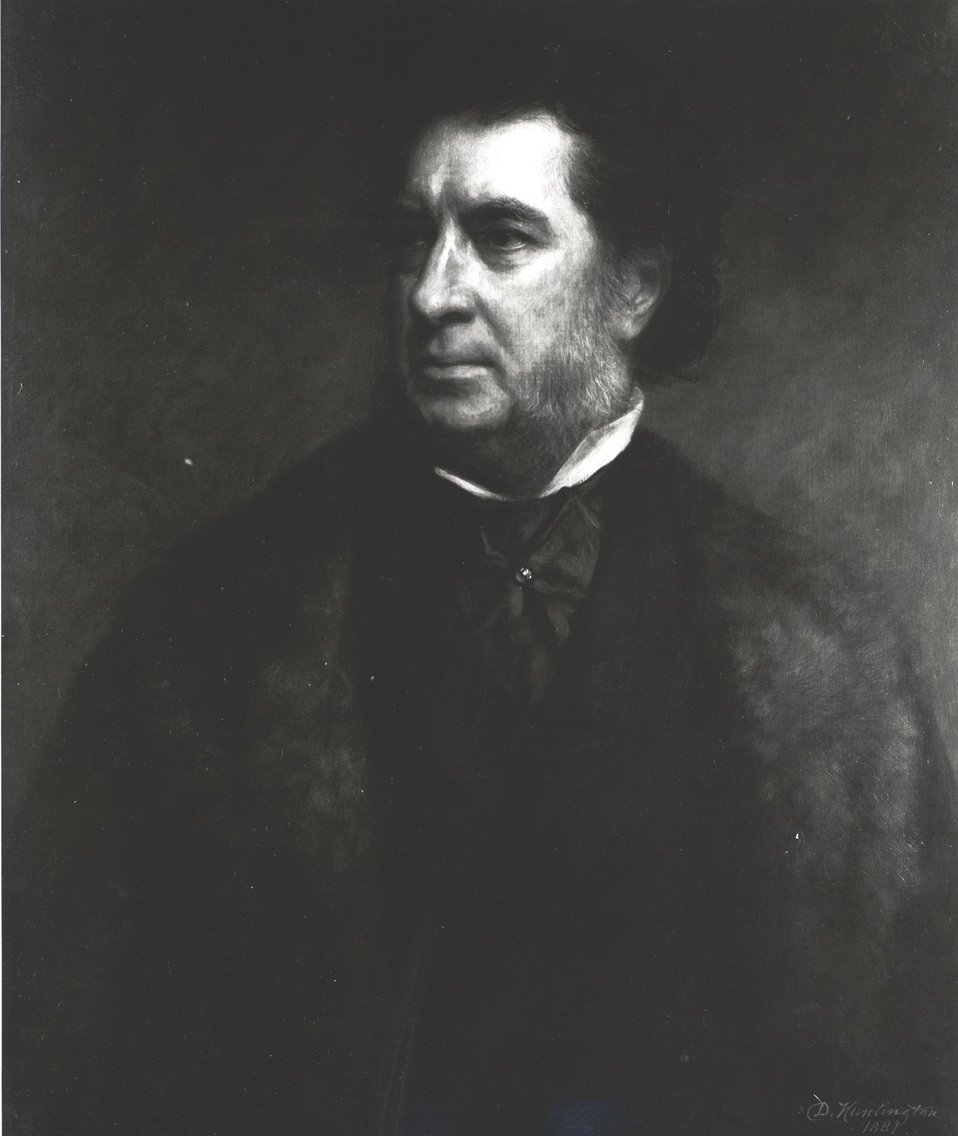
Hamilton Fish, U.S. Secretary of State, March 17, 1869 to March 12, 1877